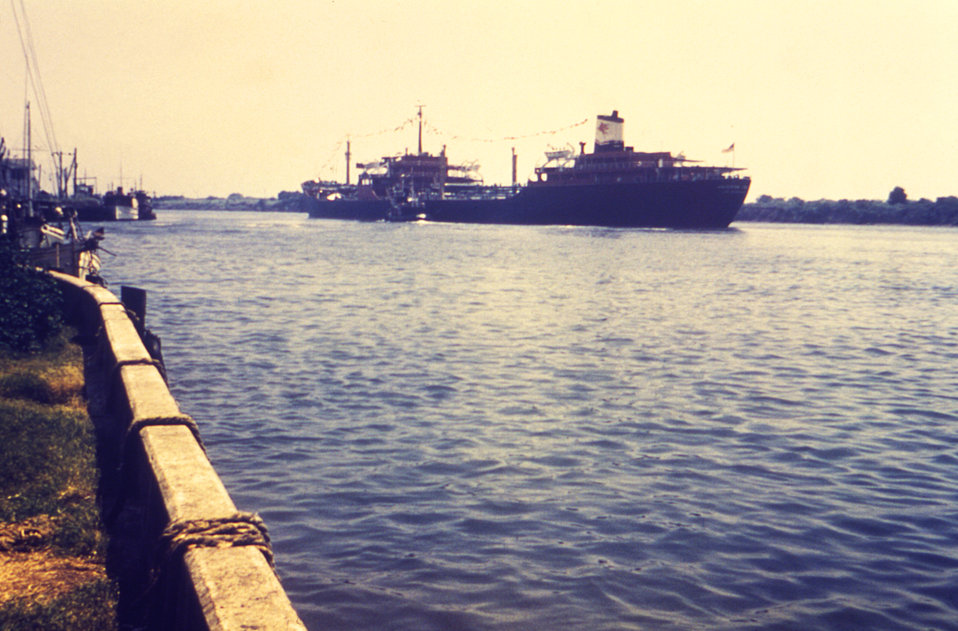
This tanker was utilizing the Intercoastal Canal in Port Arthur, Texas. The image was used in a Centers for Disease Control (CDC) teaching aid entitled, 'Minimizing Risks of Vector-borne Disease in Water Resource Developments'.